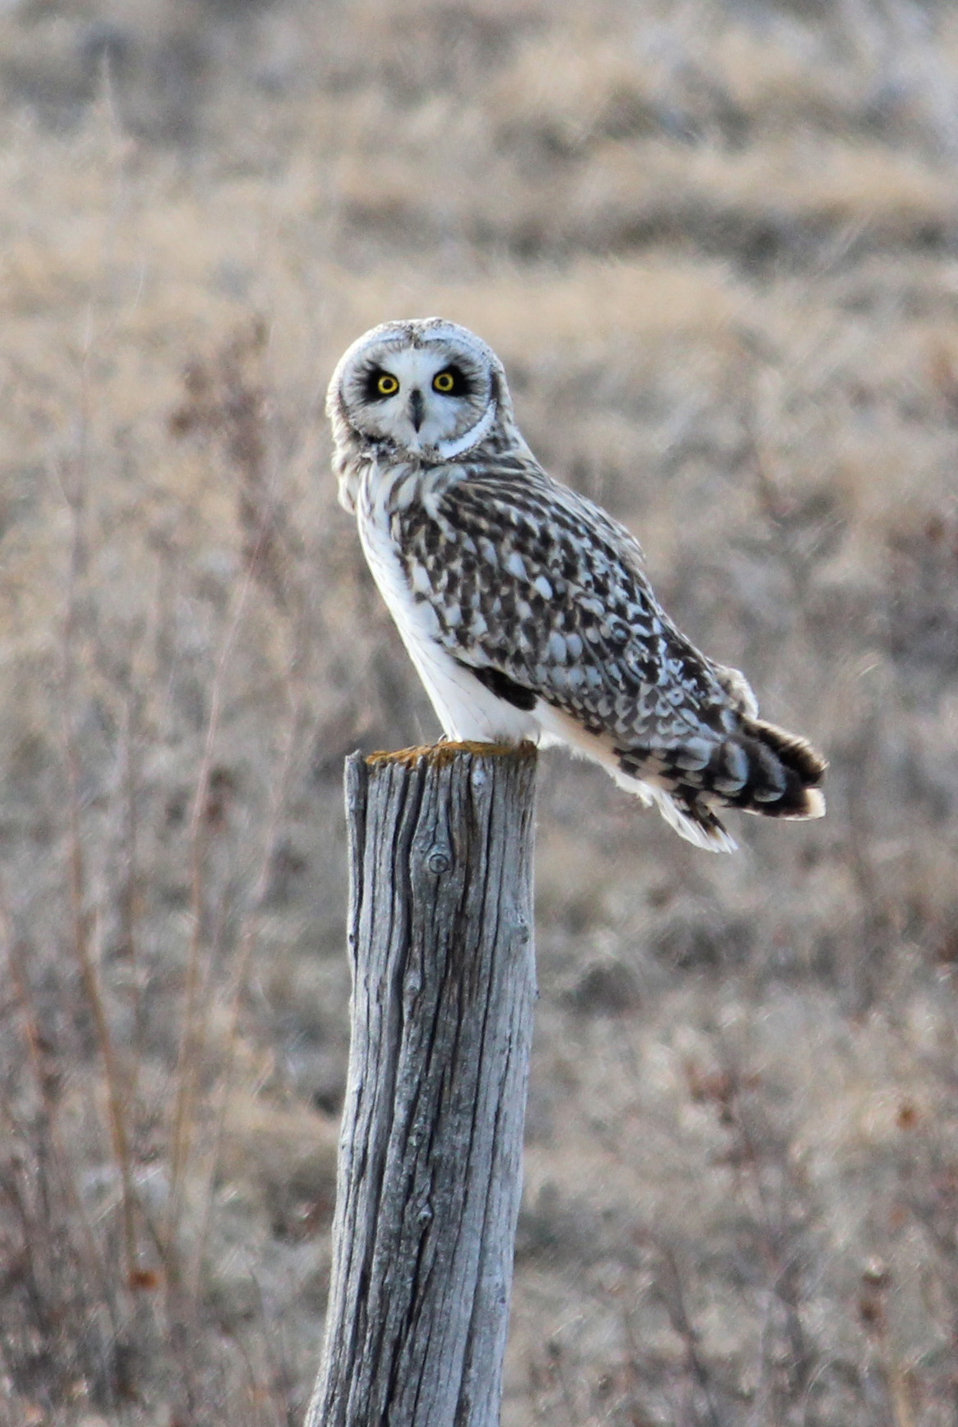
Short-eared Owl 2

This partially diurnal owl can be seen hunting over open fields, meadows, and marshes. This one is perched on a lookout post in McIntosh County, North Dakota. Surprisingly, this owl nests on the ground in grasslands. Unfortunately, its numbers are in decline due to loss of habitat and grassland conversion.